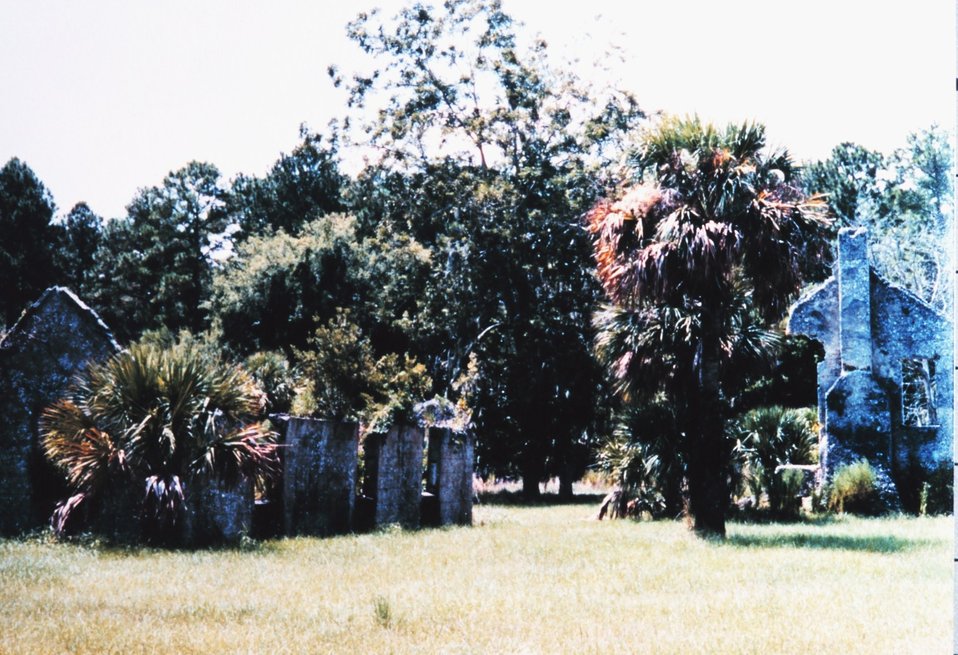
Tabby ruins at Chocolate on the northwest side of the island. Tabby refers to the building material which is a durable cement-like mixture of equal parts of water, sand, shell, and lime. These ruins are part of an antebellum plantation that was deserted following the Civil War.